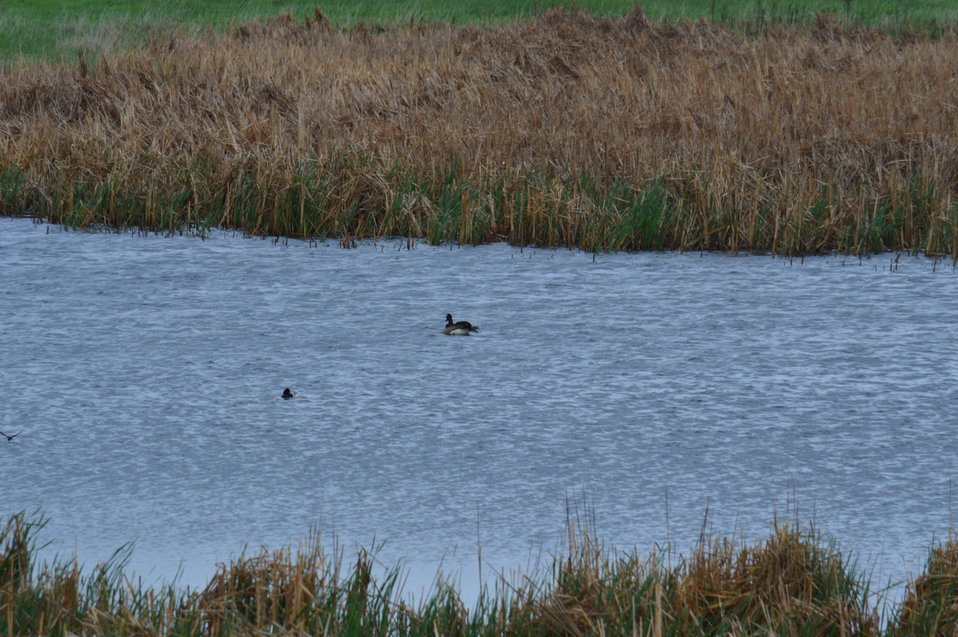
Waterfowl

Scenery and wildlife and Audubon National Wildlife Refuge in North Dakota.